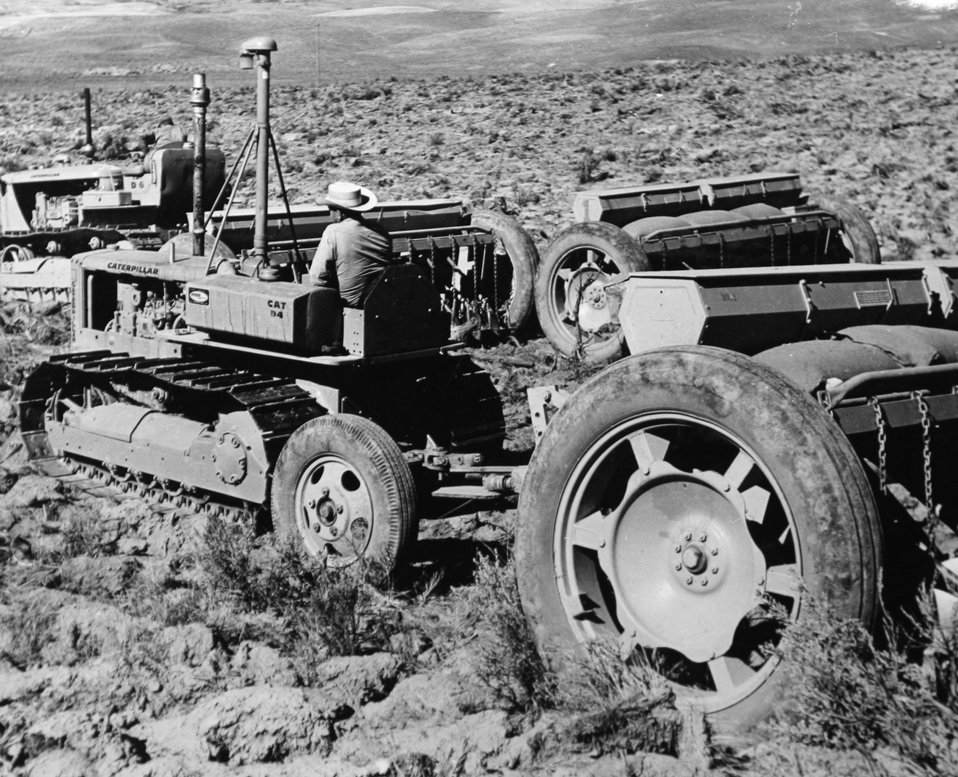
Rangeland sagebrush plows/seeders in operation. Common practice to restore depleted rangelands. circa 1950s